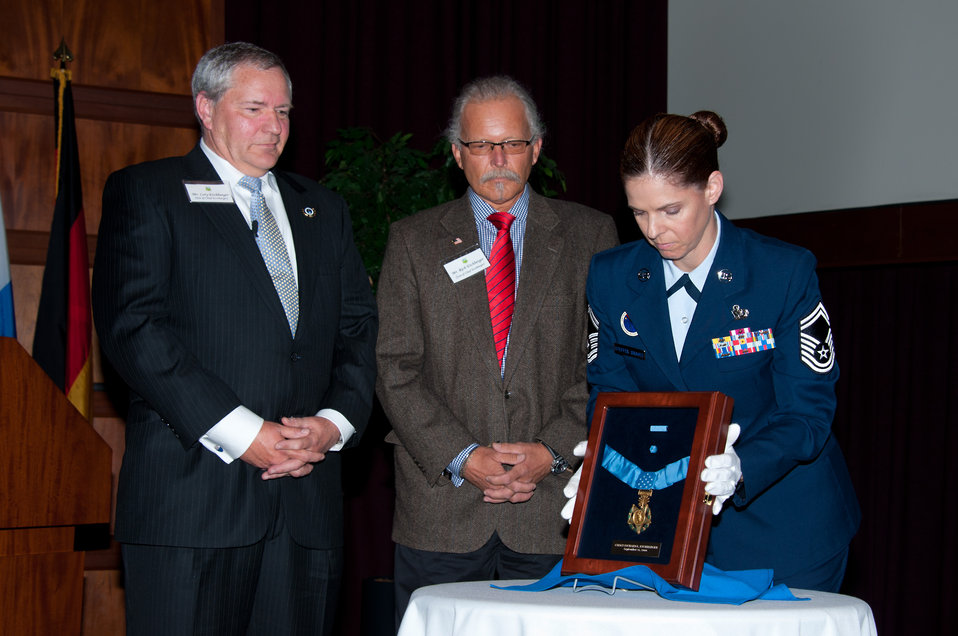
Etchberger legacy lives on

Senior Master Sgt. Karen Steffes-Graves presents the Medal of Honor awarded to Chief Master Sgt. Richard L. Etchberger to his sons Cory, left, and Rich, center, during the ceremony marking the medal's donation to the Enlisted Heritage Research Institute at Gunter Annex, Ala., March 26, 2012.